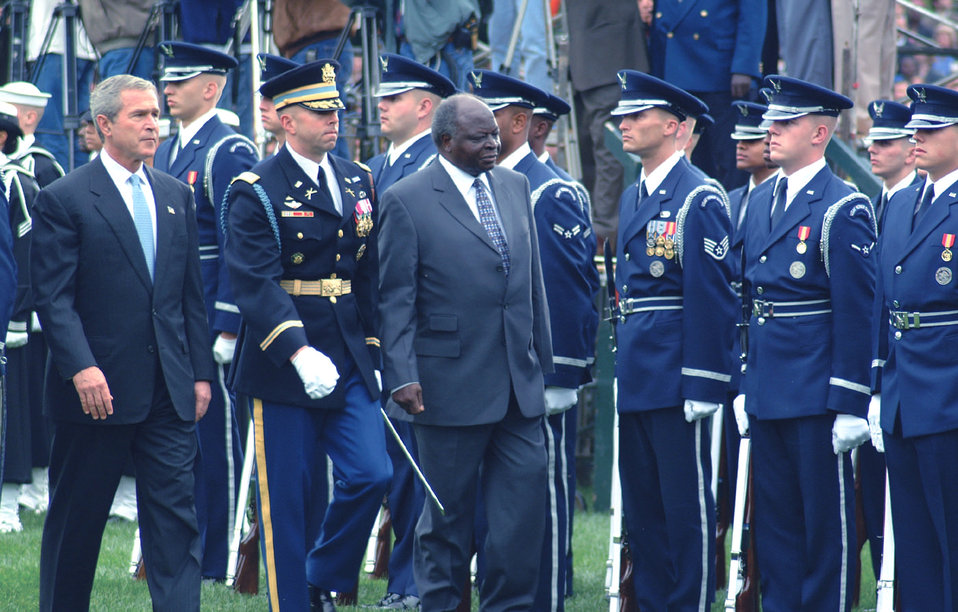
This could be you

WASHINGTON -- President George W. Bush and Mwai Kibaki, Kenya's head of state, pass in front of the Air Force Honor Guard during an arrival ceremony on the south lawn of the White House recently.